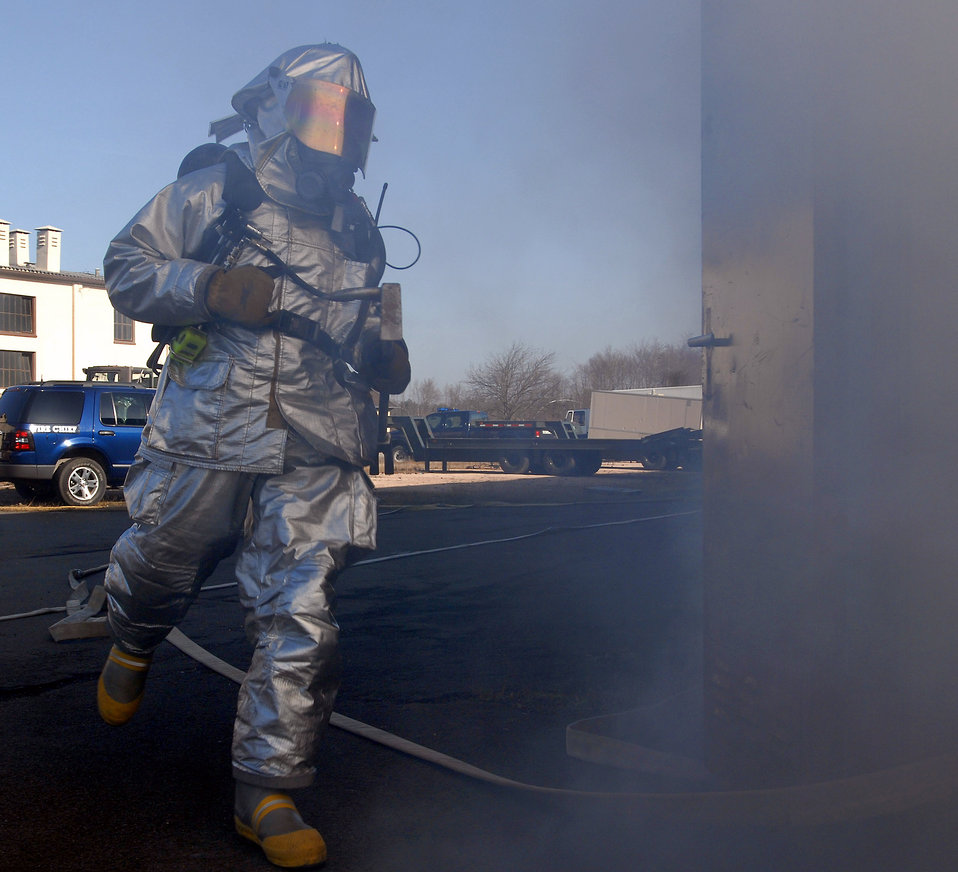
Ramstein firefighters train in mass casualty exercise

A firefighter participates in a mass casualty exercise Feb. 11 at Ramstein Air Base, Germany. The scenario involved 23 firefighters working to save victims trapped in a burning building.